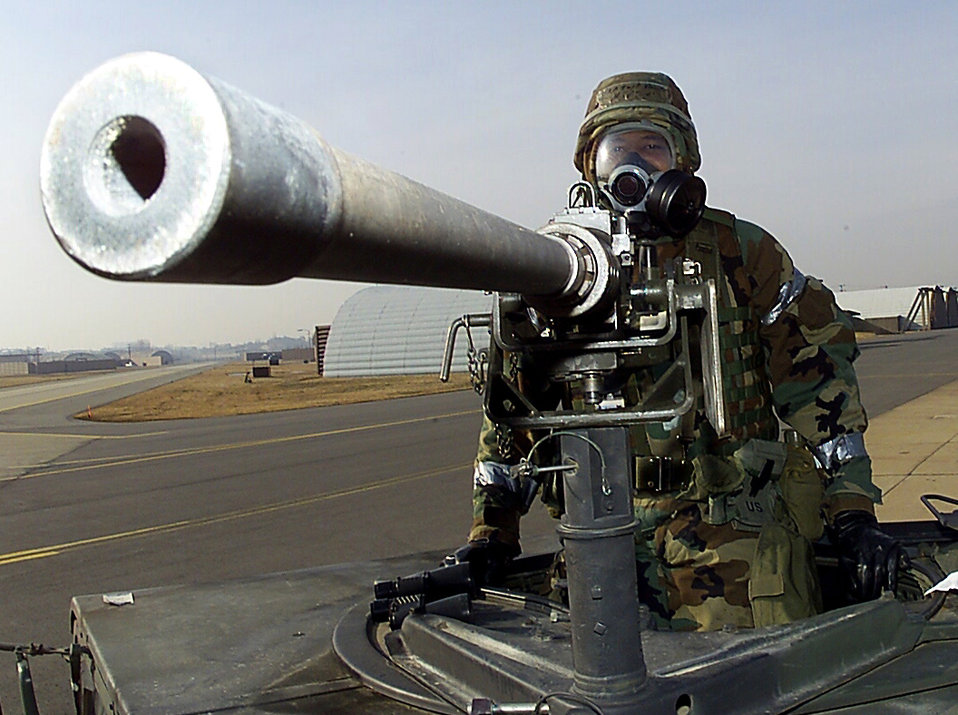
Guard duty

OSAN AIR BASE, South Korea -- Senior Airman Ben Vincent guards the flightline during a chemical exercise here. He is assigned to the 51st Security Forces Squadron.